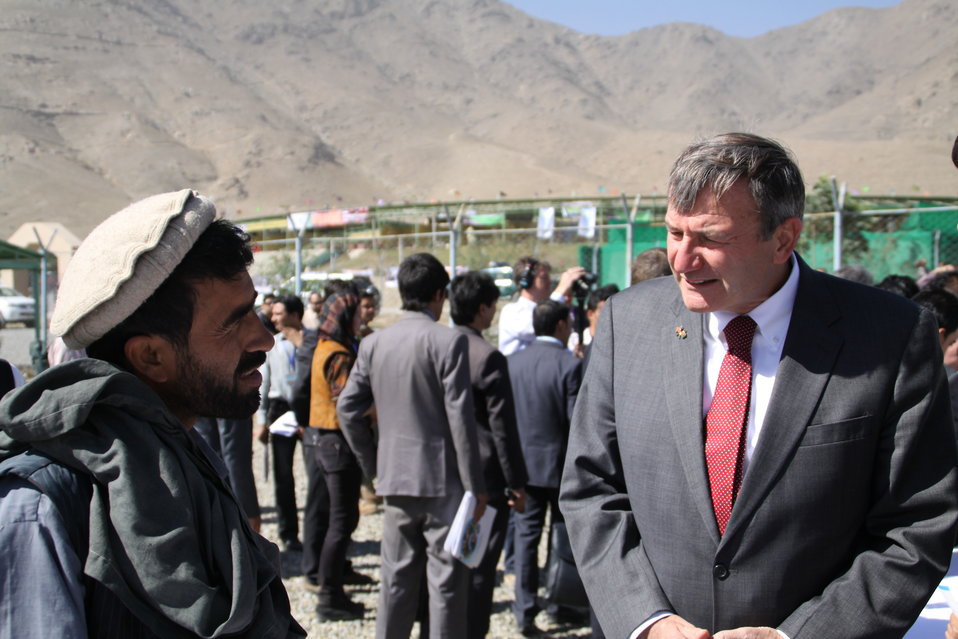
AVIPA Plus Wheat Seed Distribution 101005

US Ambassador Karl Eikenberry and USAID Acting Mission Director Kevin Brownawell joined the Minister of Agriculture, Irrigation and Livestock, H.E. Minister Mohammed Rahimi in signing a Memorandum of Understanding and distributing vouchers to area farmers for wheat and fertilizer.

US Ambassador Karl Eikenberry and USAID Acting Mission Director Kevin Brownawell joined the Minister of Agriculture, Irrigation and Livestock, H.E. Minister Mohammed Rahimi in signing a Memorandum of Understanding and distributing vouchers to area farmers for wheat and fertilizer.